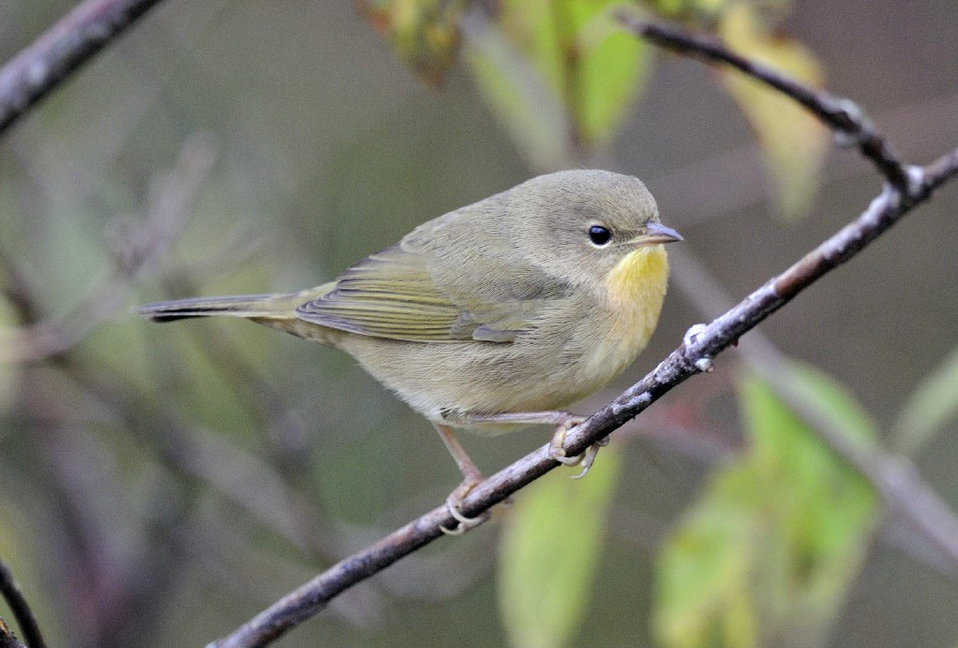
Photo of the Week - Common Yellowthroat (MA)

Photo of the week 9/26/11

Female Common Yellowthroat photographed at Hawley Bog near Hawley, MA.